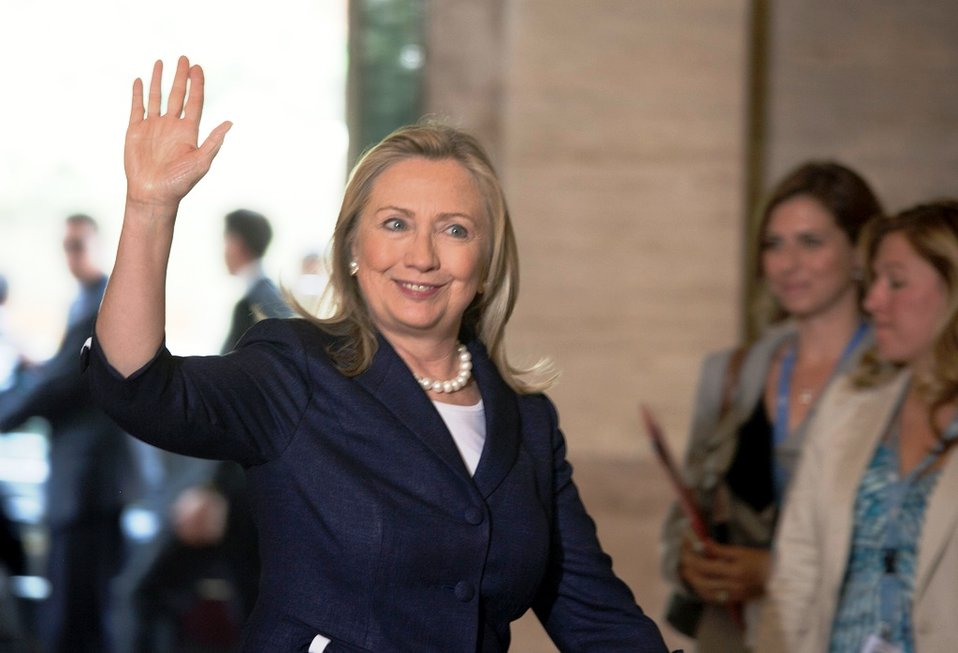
Secretary Clinton Arrives at the UN Offices at Geneva

U.S. Secretary of State Hillary Rodham Clinton arrives at the United Nations Office at Geneva on June 30, 2012 for the Meeting of the Action Group for Syria.